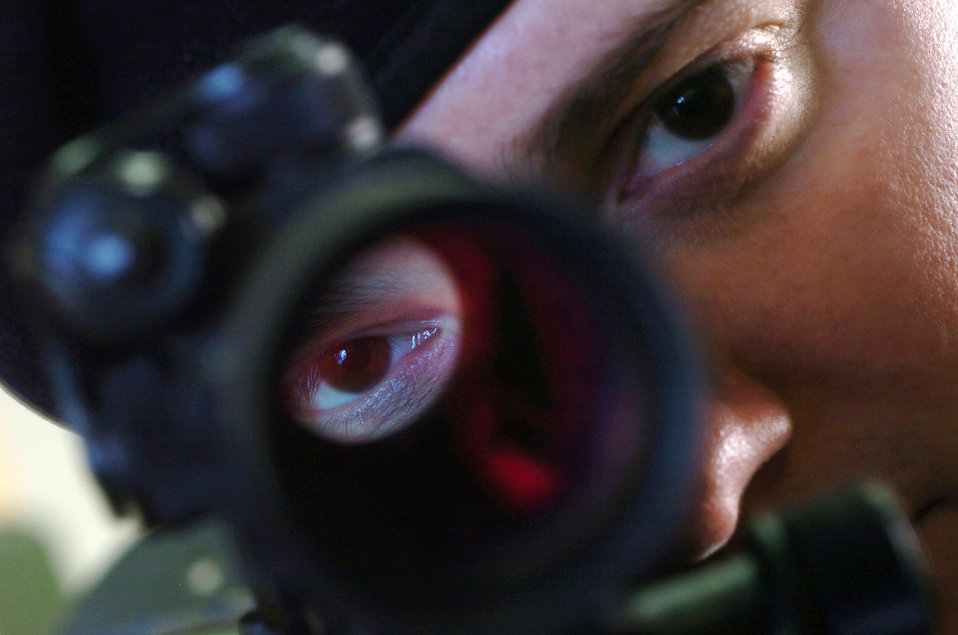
On target

YOKOTA AIR BASE, Japan -- Tech. Sgt. Joseph Vazquez uses a close-combat optical sight to spot a target during training at the small arms firing range here. It is the primary sighting system for M4 assault rifle. Sergeant Vazquez and other combat arms Airmen ensure all base weapons are inspected and maintained at the optimal performance level. Sergeant Vazquez is the combat arms section chief with the 374th Security Forces Squadron.